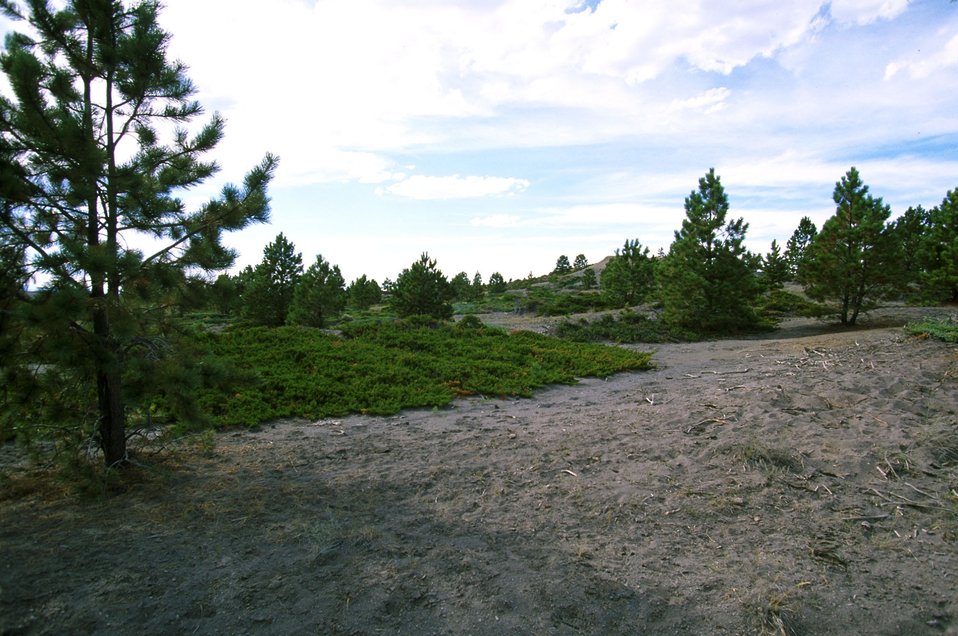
Acid Shale Area of Critical Environmental Concern (ACEC)